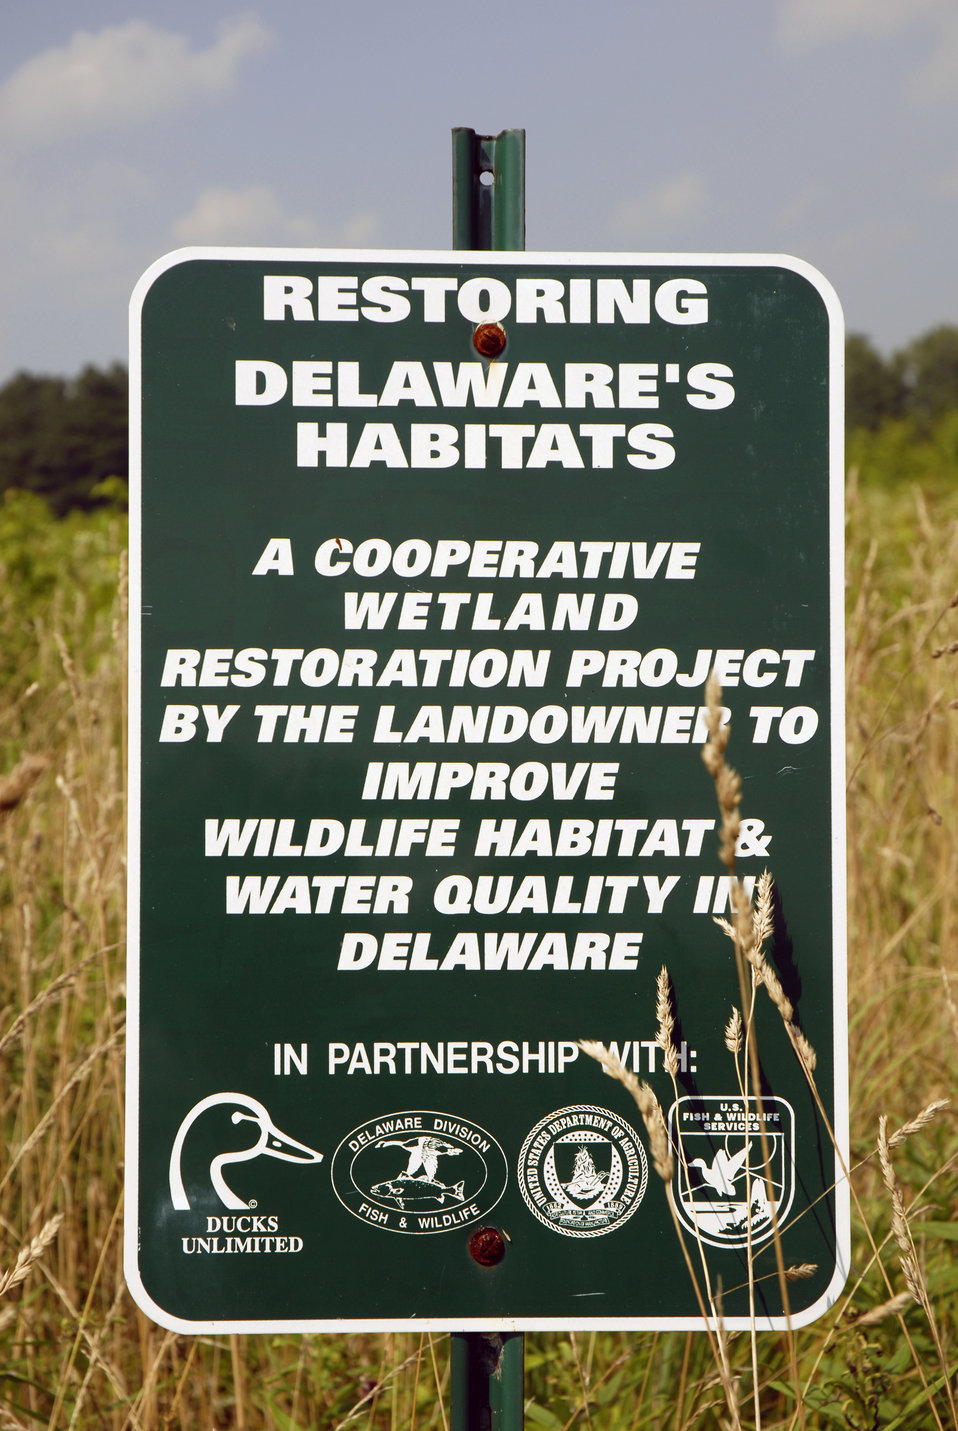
A sign is posted in front of land that is part of the U.S. Department of Agriculture’s (USDA) Natural Resources Conservation Service (NRCS) Conservation Effects Assessment Project (CEAP-Wetlands) study of the Chesapeake Bay. CEAP-Wetlands concentrates on the ecological benefits of conserving wetland areas in Delaware on July 8, 2008. Wetlands provide significant ecosystem services that include floodwater storage, water quality improvement, biodiversity support, and wildlife habitat. Certain practices are aimed specifically at maintaining or restoring wetland ecosystem services.